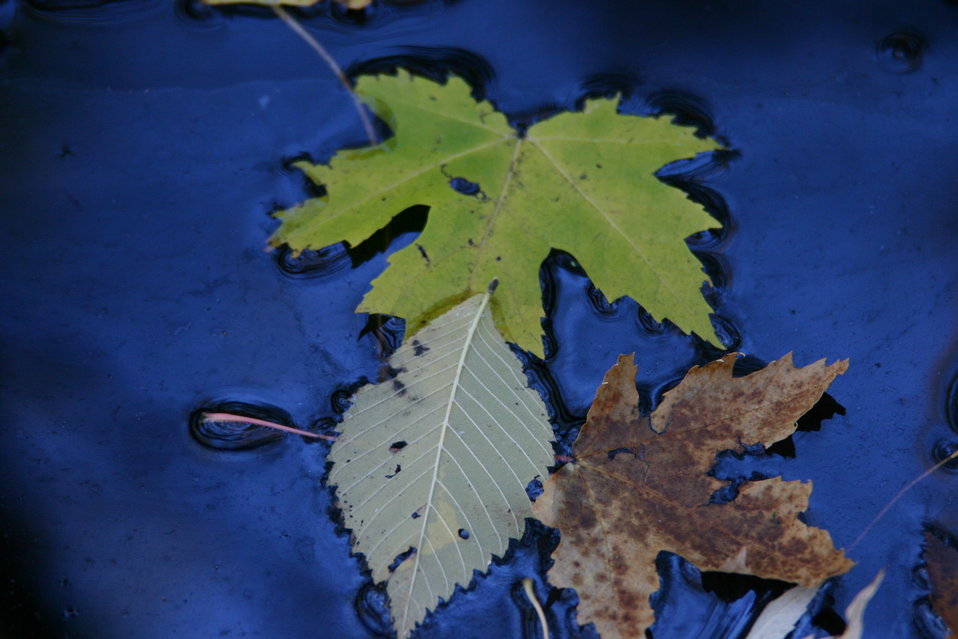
Silver maple leaves

Leaves on a still vernal pool - Missisquoi National Wildlife Refuge